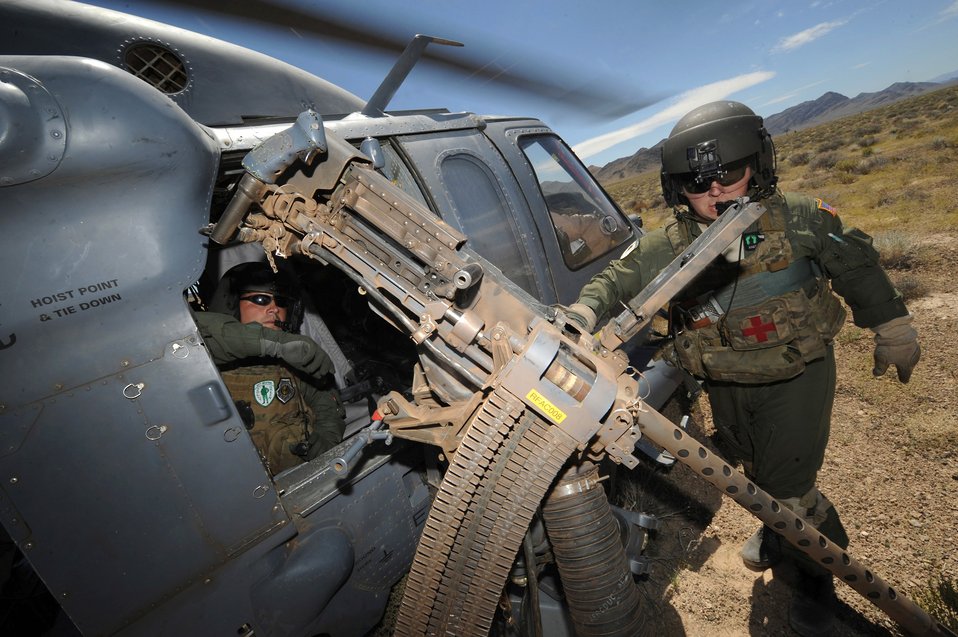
Ready for firing

Tech. Sgt. Michael Vincent (left) and Staff Sgt. Andrew Gibson prepare to reload .50- caliber machine gun on an HH-60 Pave Hawk during a training mission June 25, 2010, on the Nevada Test and Training Range. Sergeants Vincent and Gibson are flight engineers.